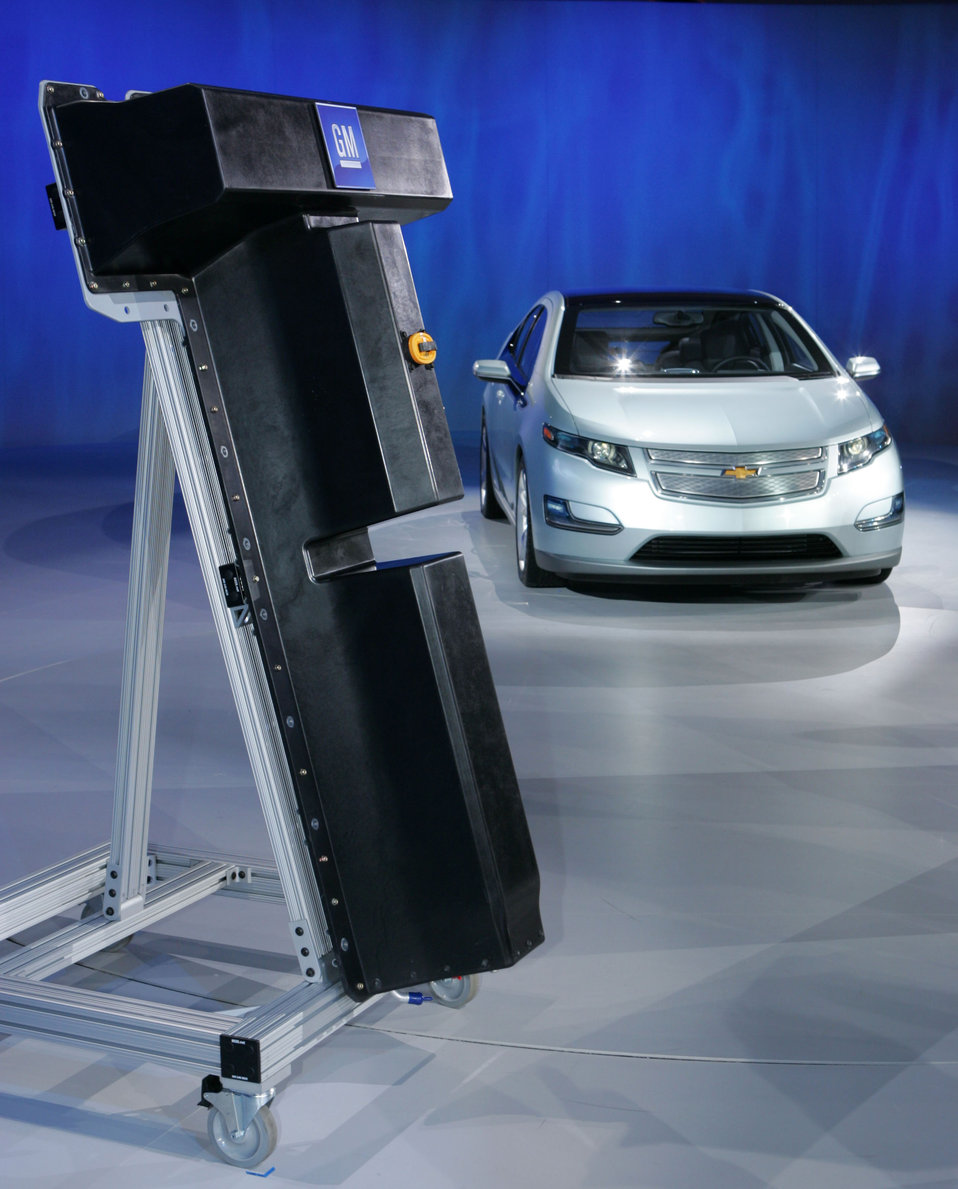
SHOWN IS A T-SHAPED CHEVROLET VOLT BATTERY REPLICA AND CHEVROLET VOLT ELECTRIC VEHICLE.

The car's lithium-ion battery is based on technology developed at Argonne National Laboratory.